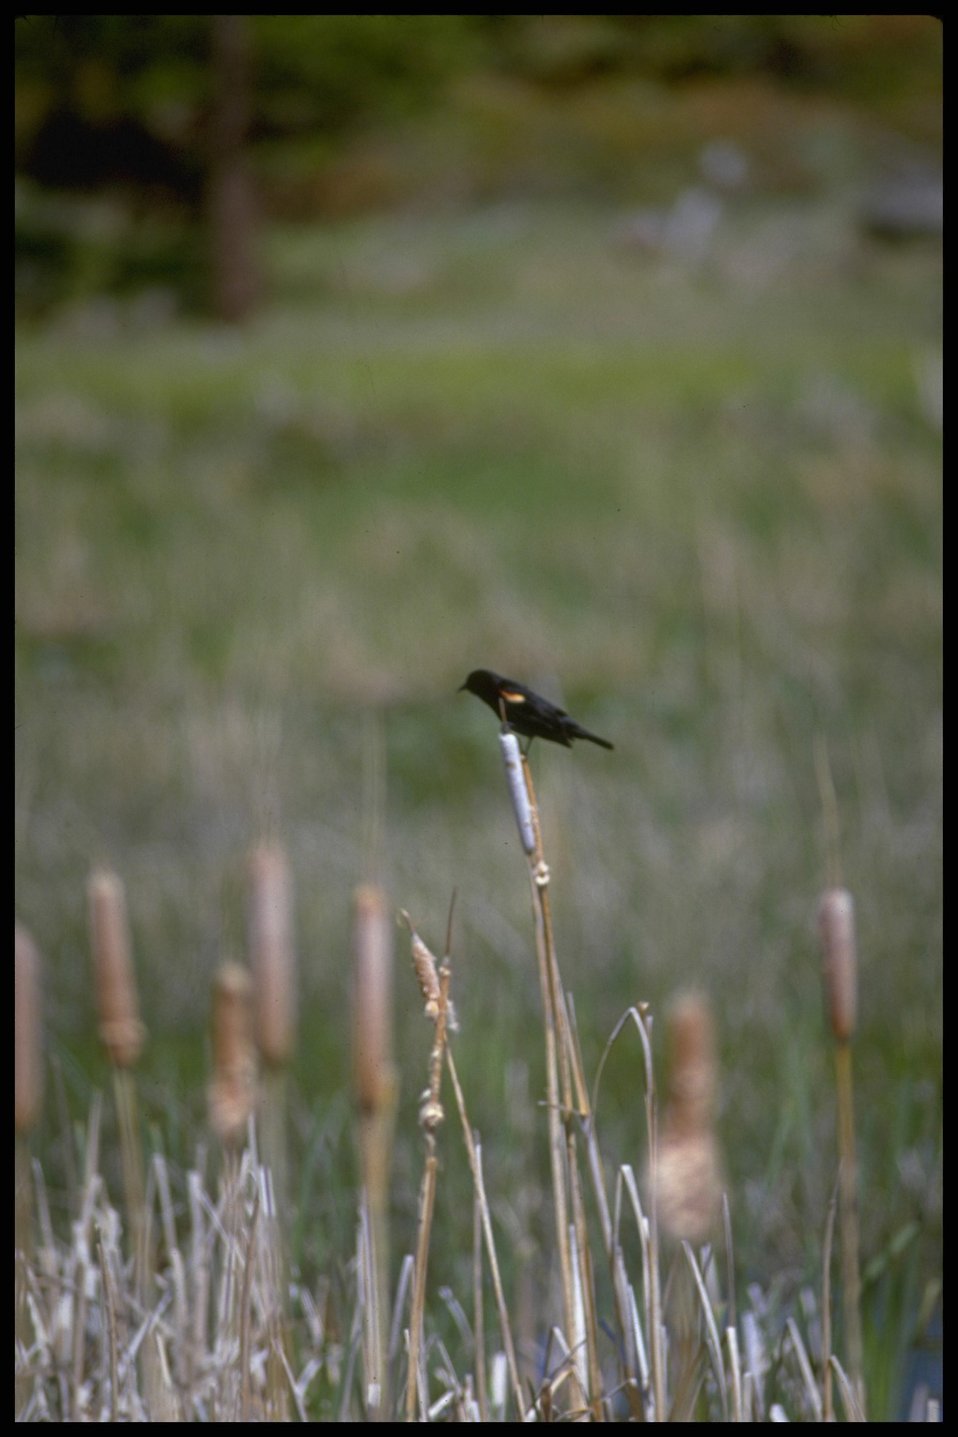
Far shot of Red Winged Blackbird, Lakeview District.